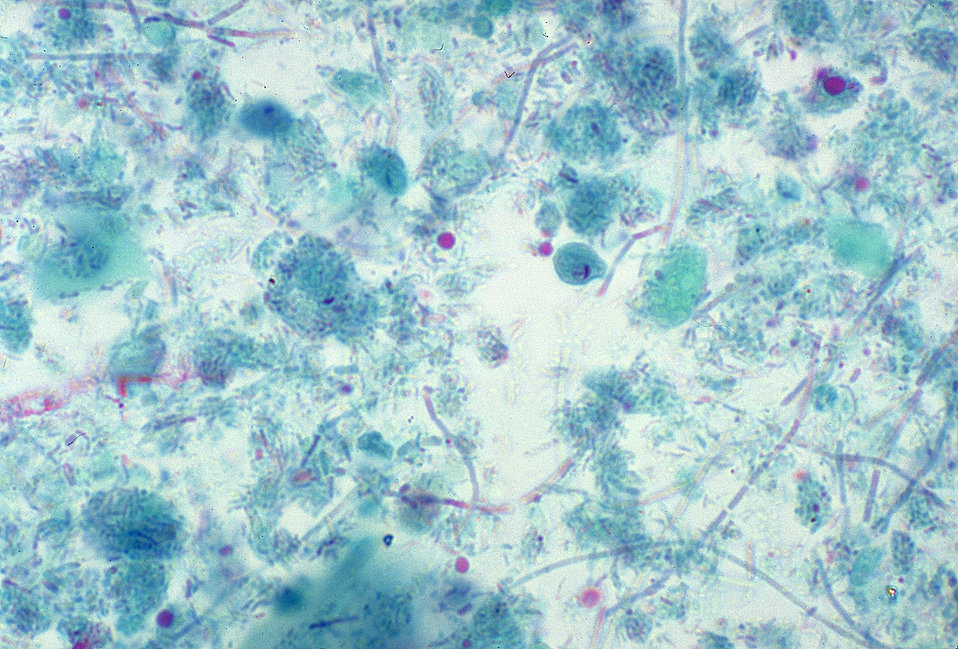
This photomicrograph depicts the cyst of an Chilomastix mesnili parasitic amoeba.